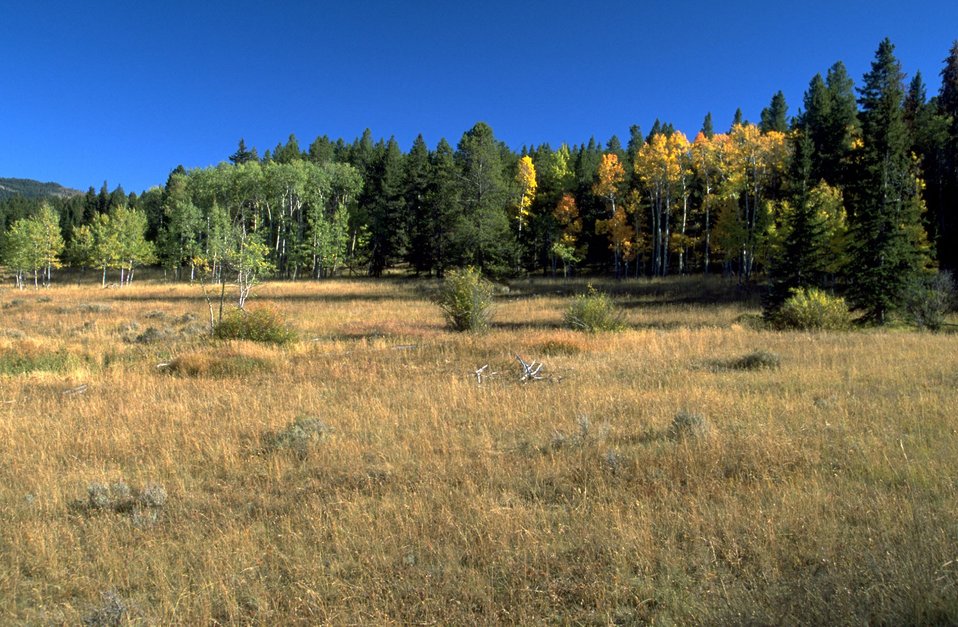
Grassy slope - Aspen forest in background